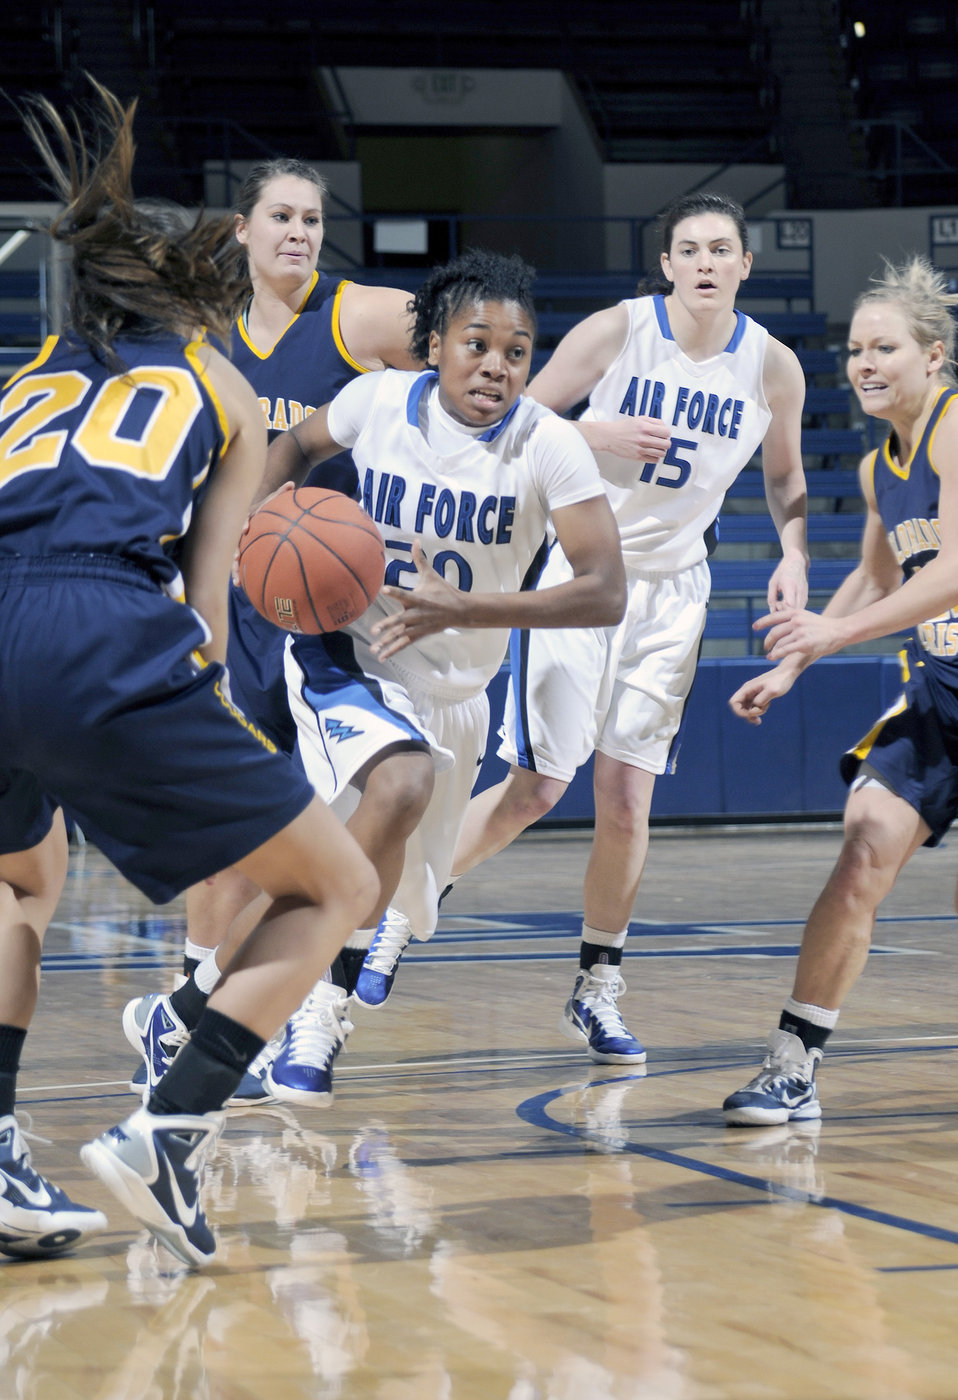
Women's basketball team defeats CCU Lady Cougars

Air Force Academy freshman Camille Thompson drives in for a layup against the Lady Cougar defense as the Falcons defeated Colorado Christian University Nov 28, 2010, at the Air Force Academy's Clune Arena in Colorado Springs, Colo.